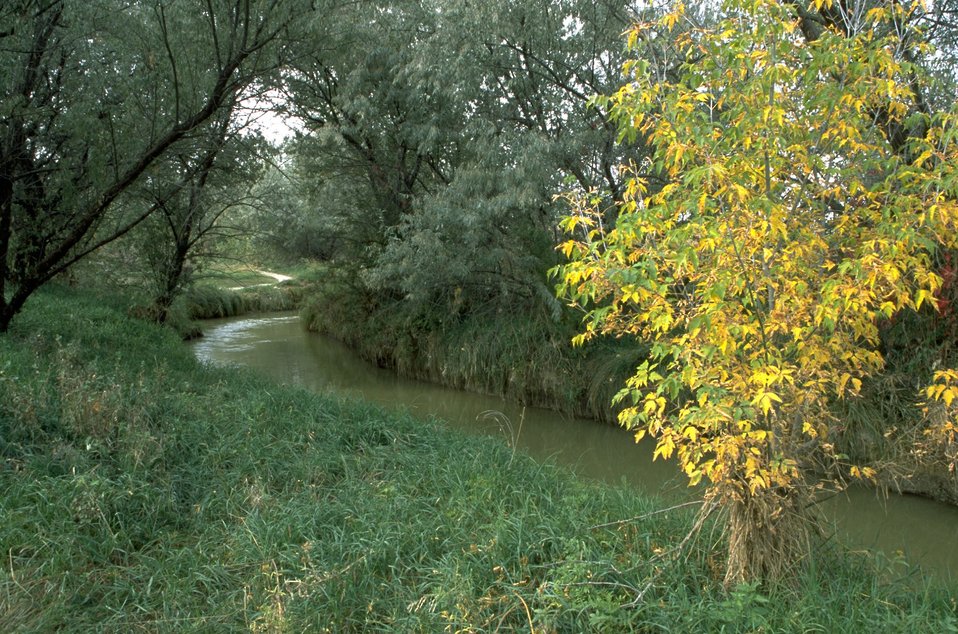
Trees and grass along Jones Creek at Matthews Recreation Site